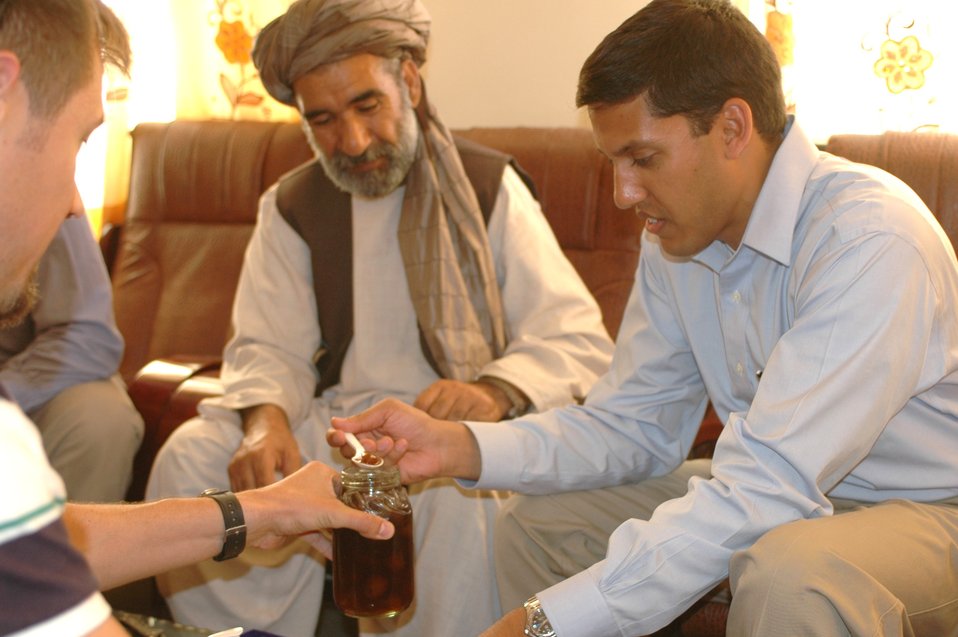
Dr Shah Visits Argandab April 10, 2010